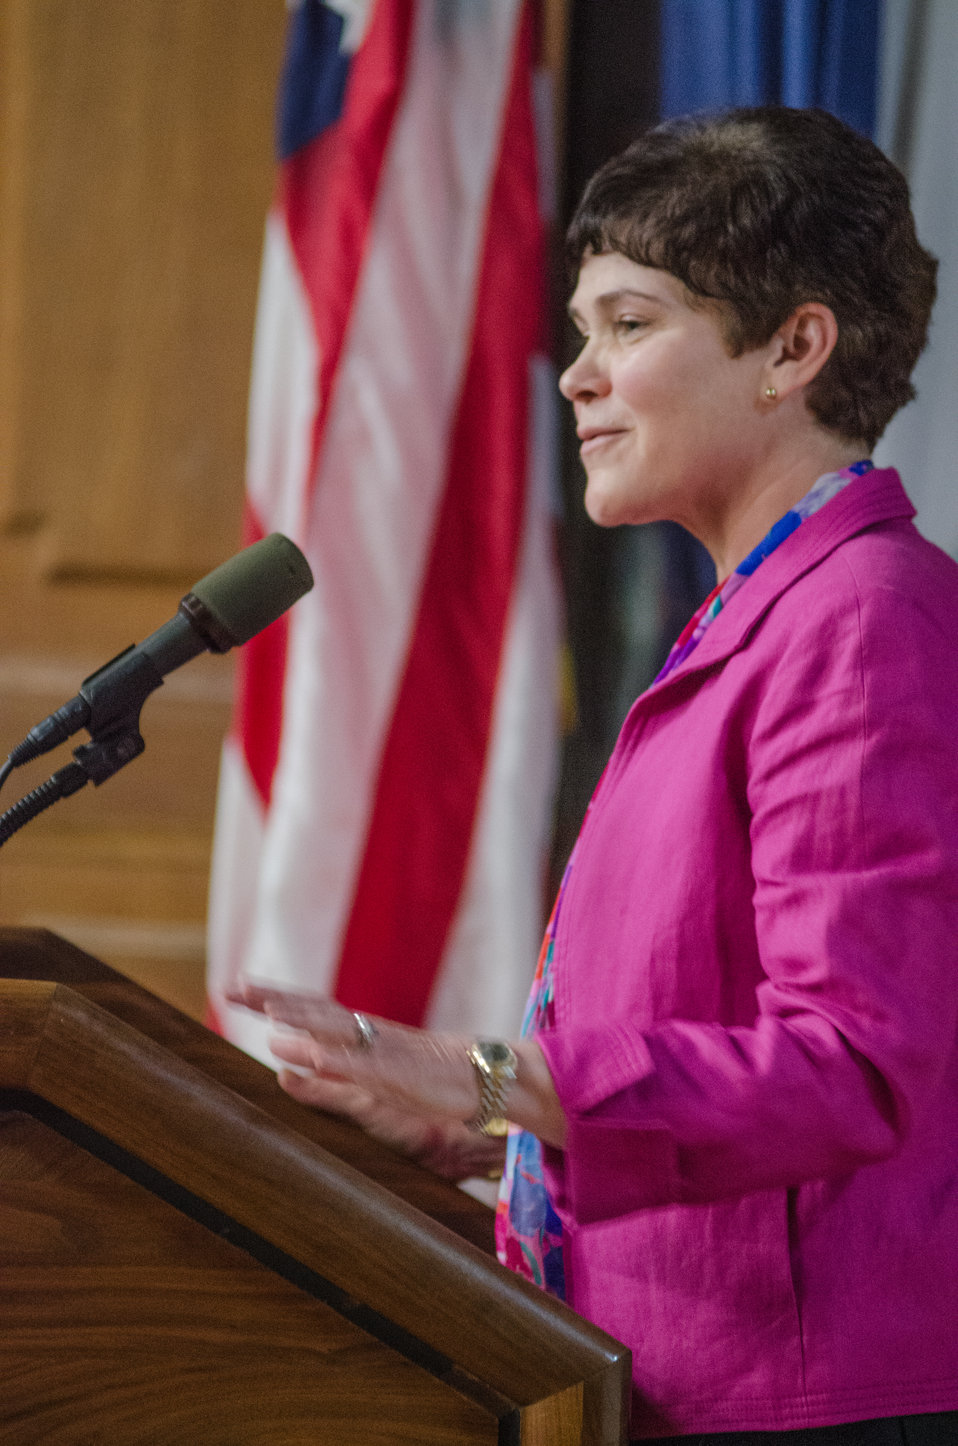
Agriculture Deputy Secretary Krysta Harden speaks at the U.S. Department of Agriculture’s (USDA) Rural Development’s (RD) 2nd Annual Cultural Transformation kickoff opening ceremony and forums, themed “Employees Influencing Change,” on Tuesday, Aug. 13, 2013 at USDA in Washington, D.C.